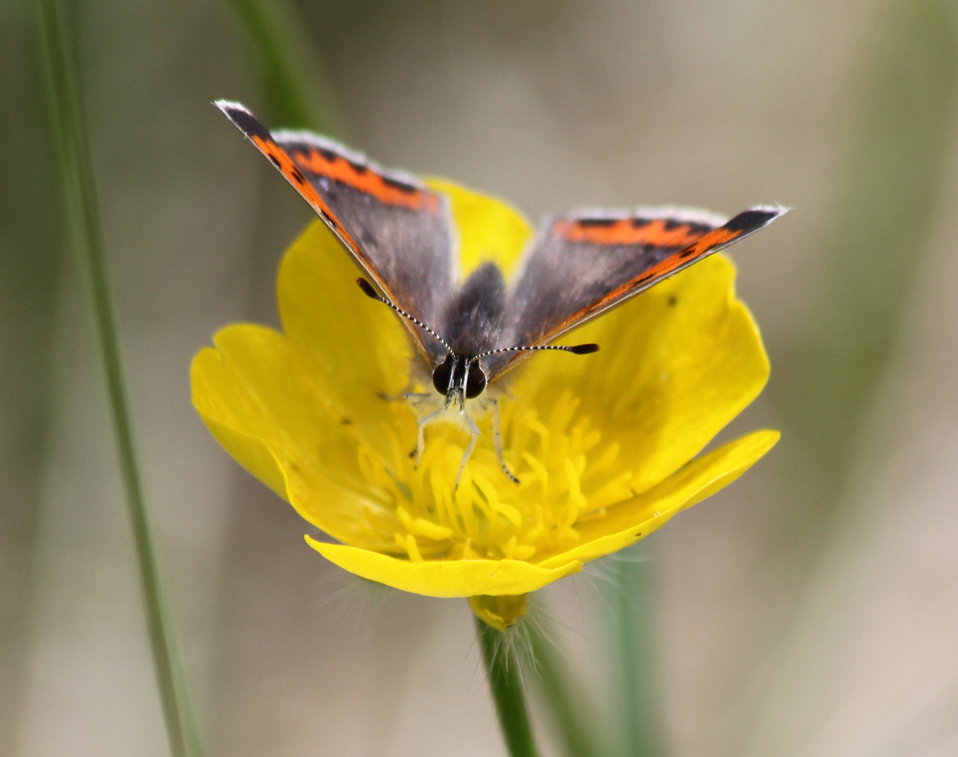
American copper

Metinic Island, Maine Coastal Islands NWR. Summer with the Seabirds blog: mainecoastalislands.wordpress.com/2010/07/23/metinic-isla...